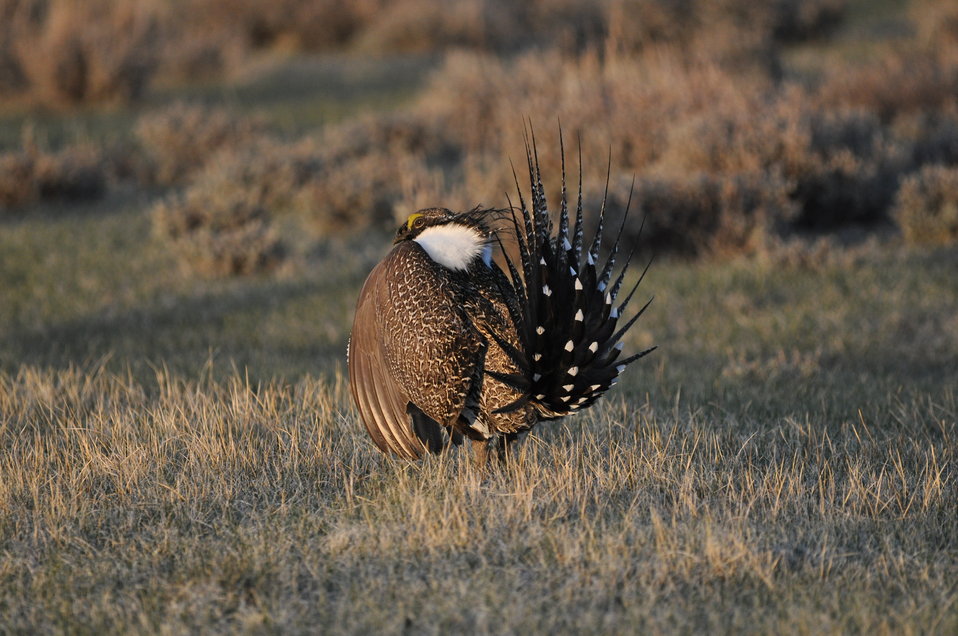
Greater Sage-Grouse

Photo Credit: Jeannie Stafford/USFWS
A greater sage-grouse male struts at a lek (dancing or mating ground) near Bridgeport, CA to attract a mate.